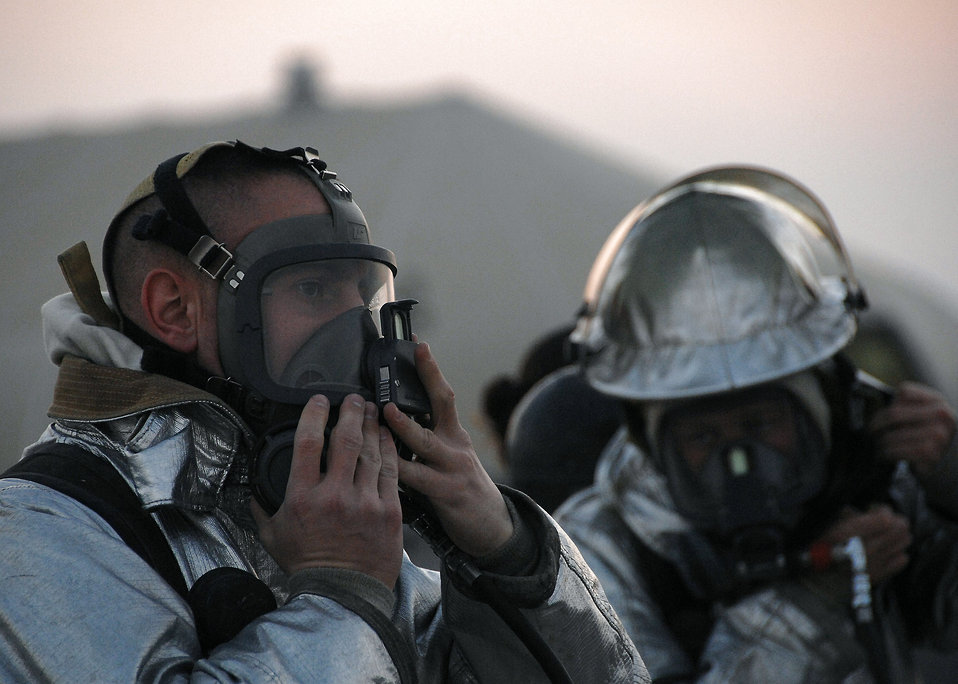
Burning desire

Firefighters from the 386th Expeditionary Civil Engineer Squadron check their gear prior to participating in a live fire aircraft trainer Nov. 24 at an air base in Southwest Asia. The firefighters must complete one daytime and nighttime live fire burn annually.